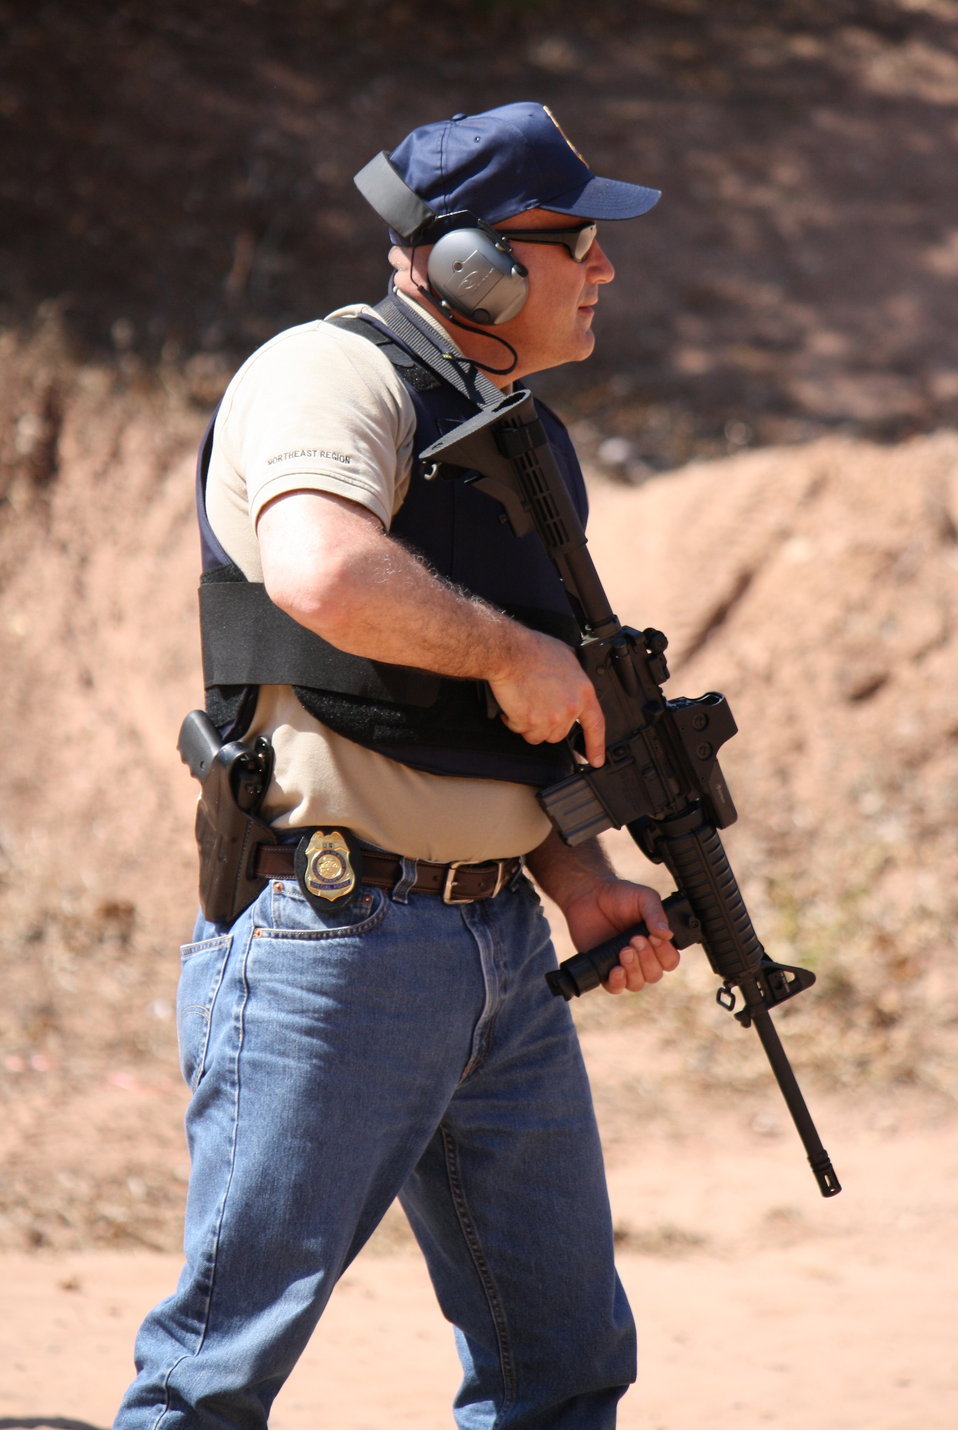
Special Agent in Charge of the Northeast Office of Law Enforcement, Sal Amato

Law Enforcement target practice at outdoor shooting range in Glastonbury, CT.